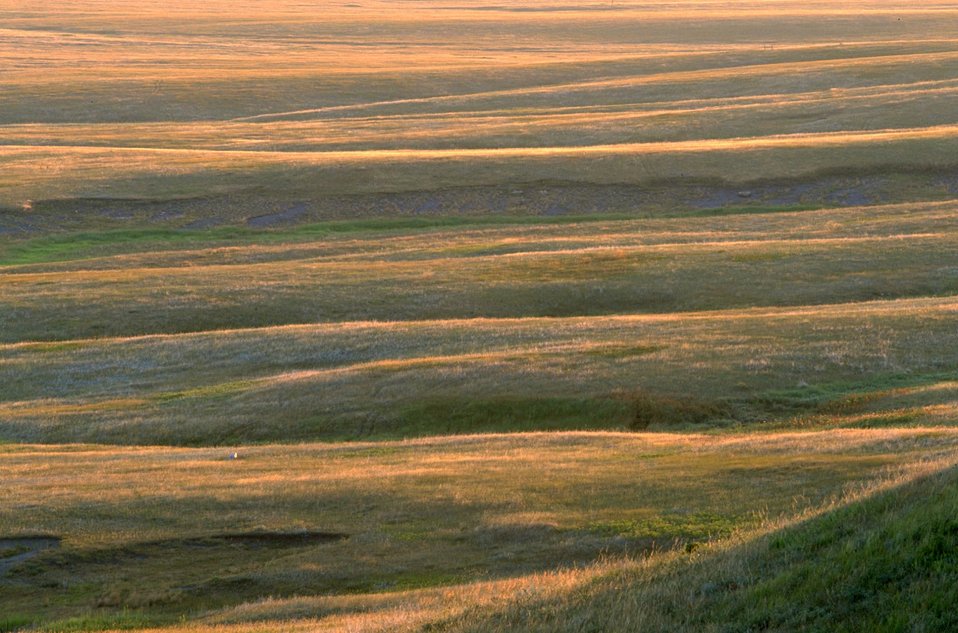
Grassland Vista at the north end of Fort Meade